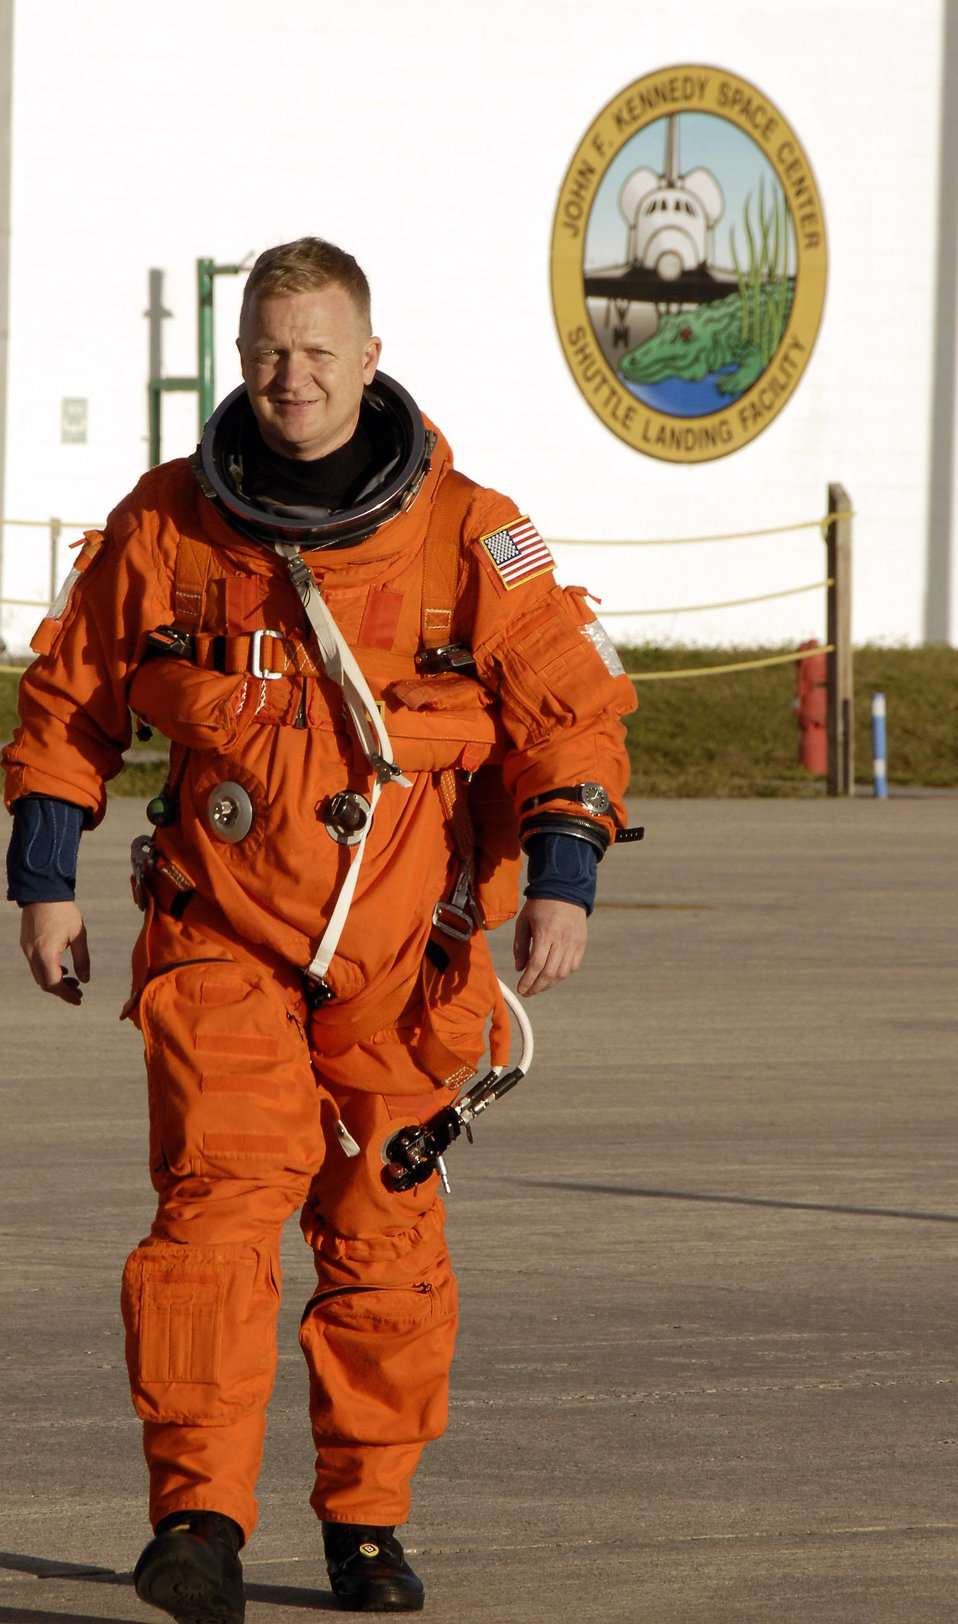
Civil Air Patrol colonel to pilot Space Shuttle Endeavour

Col. Eric Boe heads for a shuttle training aircraft to practice landings on the Shuttle Landing Facility's runway Nov. 11 at NASA's Kennedy Space Center in Florida. He is the STS-126 pilot and is a Civil Air Patrol member.